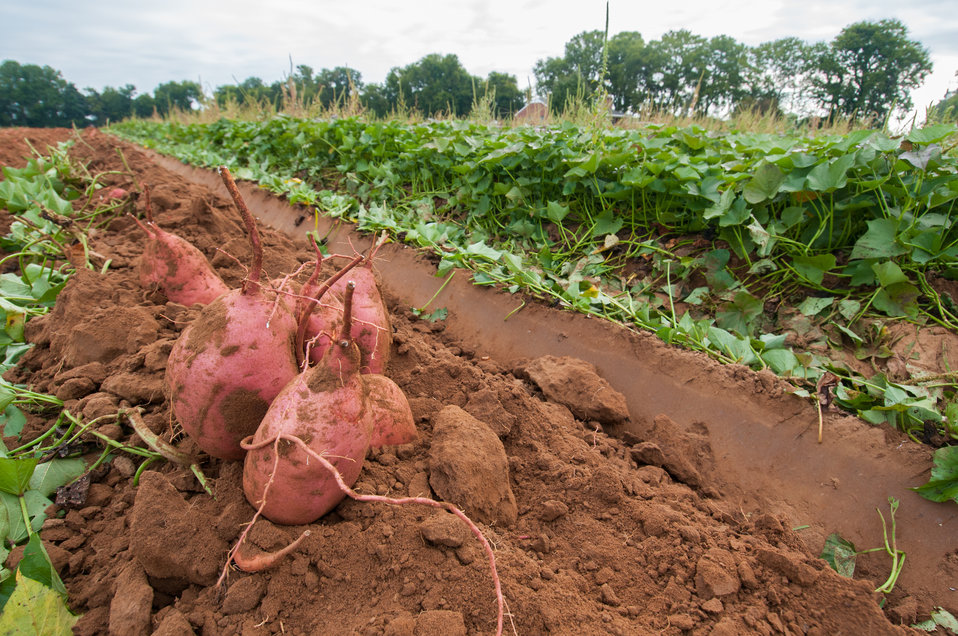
The sweet potatoes harvest at Kirby Farms in Mechanicsville, VA on Friday, Sept. 20, 2013. Kirby Farms devotes 200 acres of the farm to eggplant, spinach, beets, tomato, jalapeno peppers, melons and a variety of greens. Soybeans and small grain are grown on the remaining 300 acres. The fertile Virginia soil and their management practices, allows Kirby Farms to double and triple crop fields with rotational crop selection. Wholesalers, who buy from this farm, sell the produce to major supermarkets in the Mid-Atlantic region, from North Carolina to Maryland. Restaurateurs in the local area prepare and serve their harvest to patrons in the Greater Richmond Region.